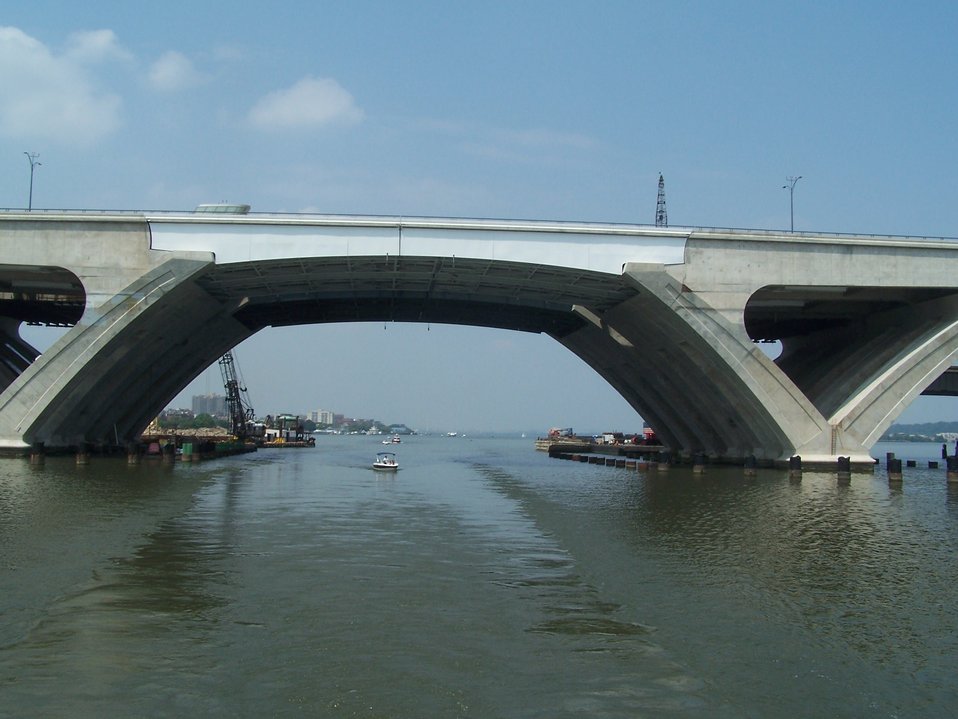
The Woodrow Wilson Bridge on I-95/I-495 on the south side of Washington, D.C.